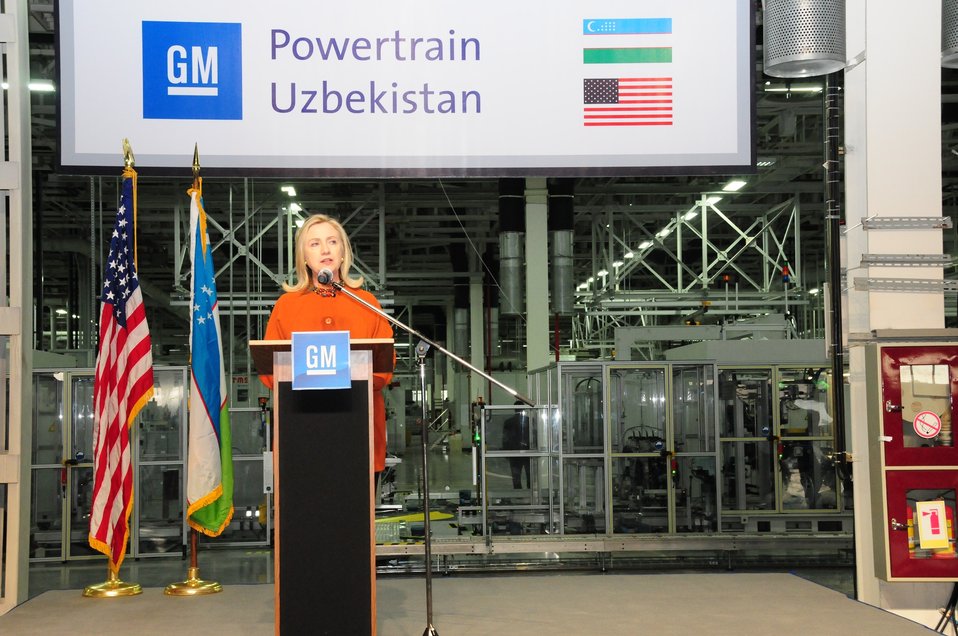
Secretary Clinton Delivers Remarks at GM Powertrain Factory

U.S. Secretary of State Hillary Rodham Clinton delivers remarks at the General Motors (GM) Powertrain factory in Tashkent, Uzbekistan, on October 23, 2011.